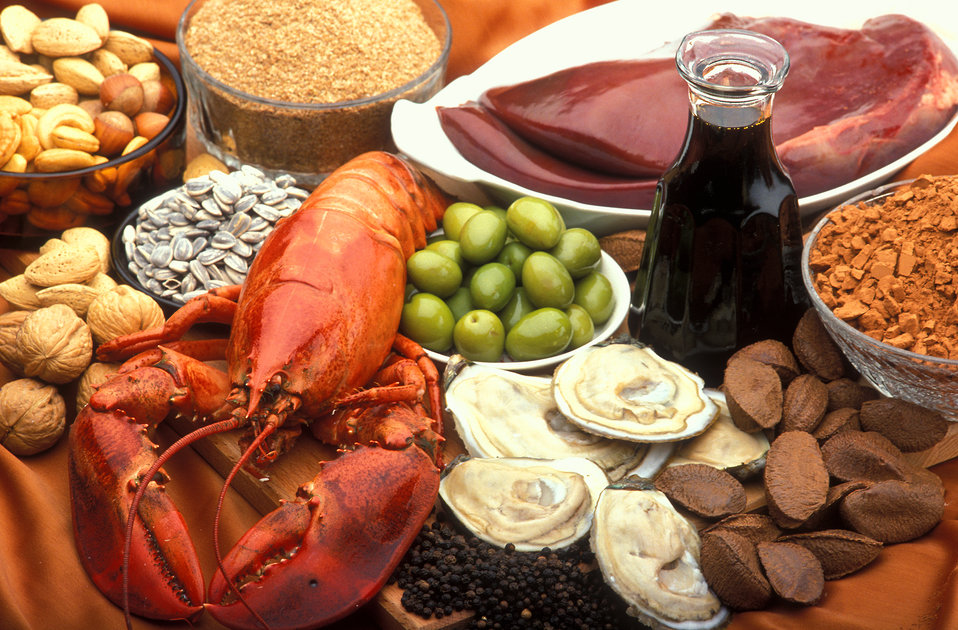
This collage of copper sources was photographed on Nov. 22, 2005. Oysters, beef, lamb liver, Brazil nuts, blackstrap molasses, cocoa, and black pepper provide rich sources of copper. Lobster, nuts, sunflower seeds, green olives, and wheat bran are also good sources of copper.